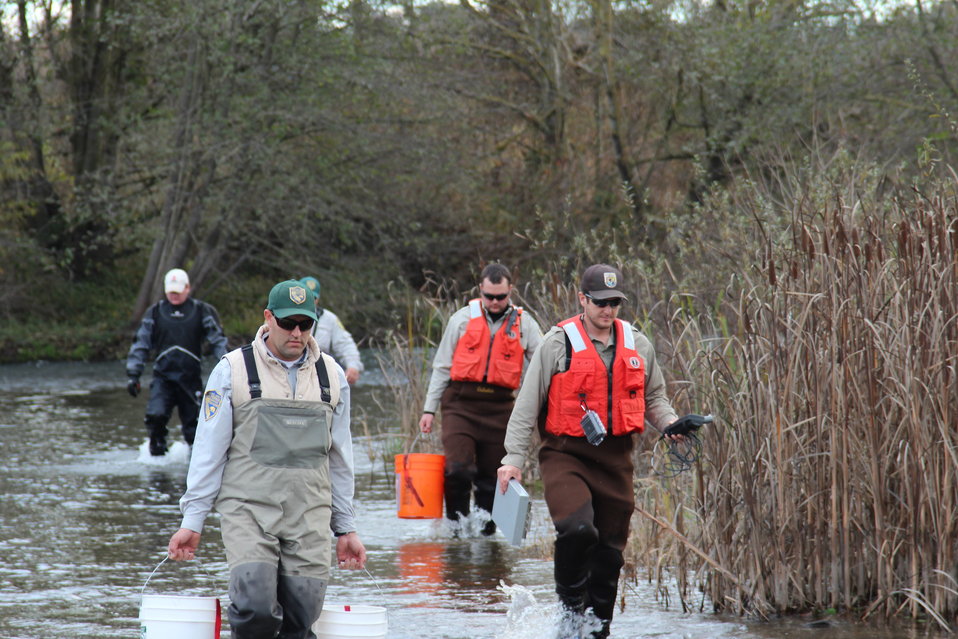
Biologists wade into the river

Service and California Department of Fish and Wildlife biologists walk into the river to retrieve egg tubes.